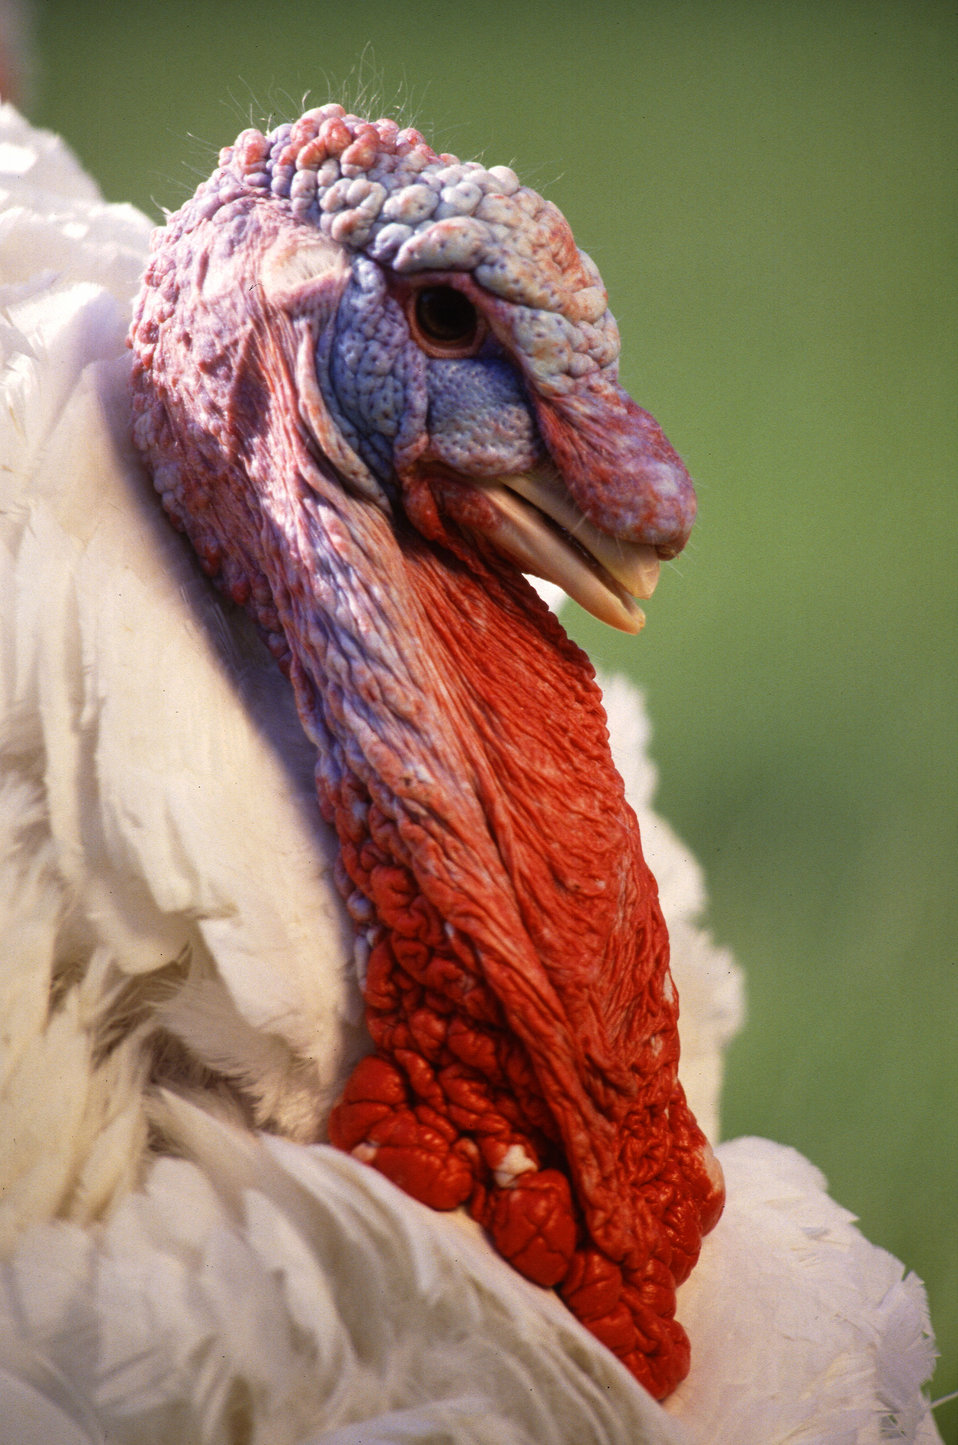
Large White male turkey looks over his surroundings.